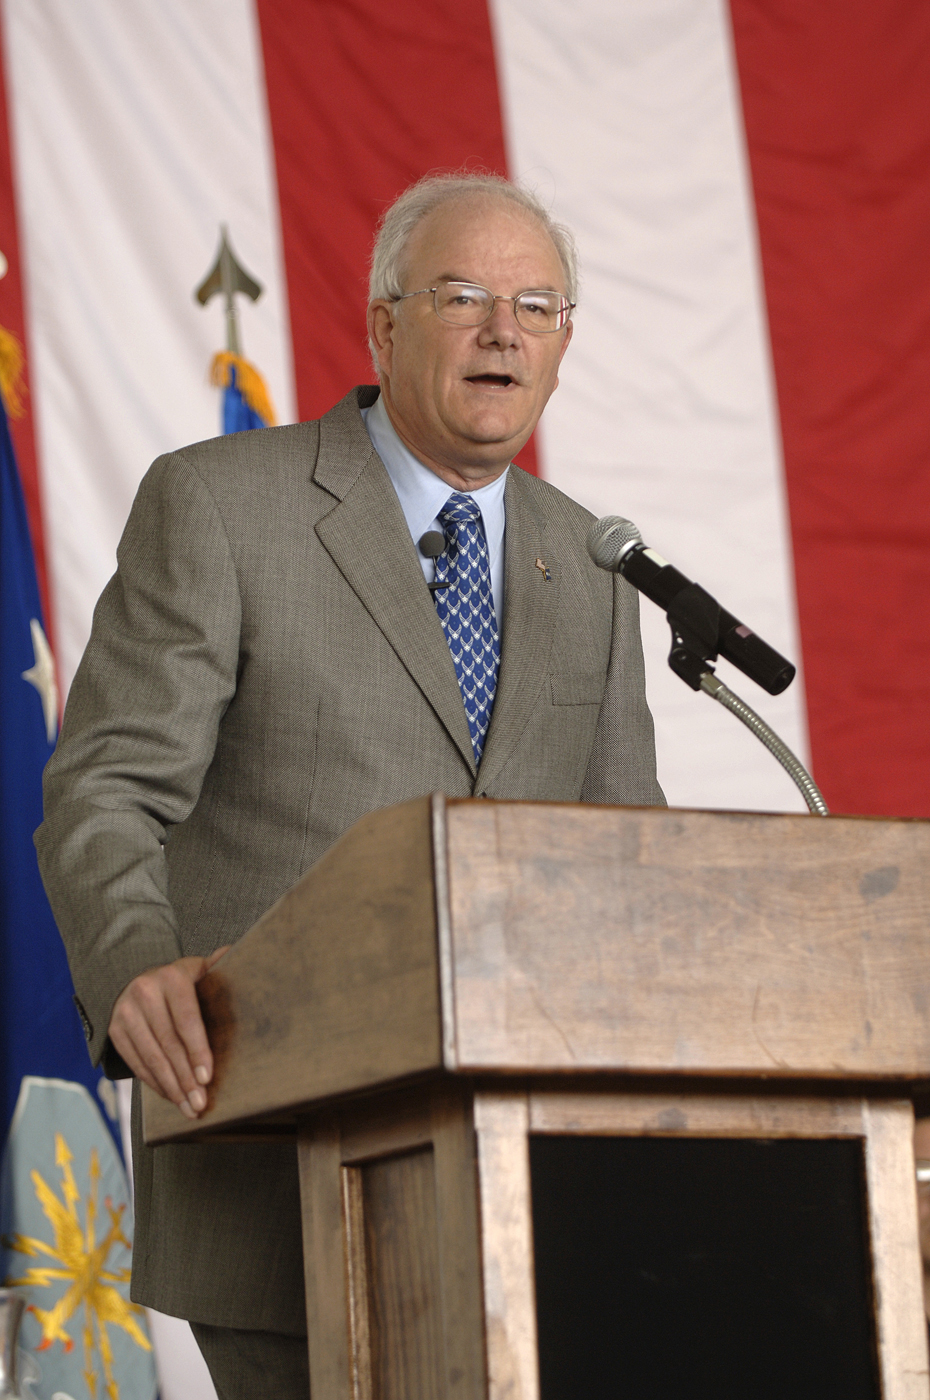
Secretary of the Air Force at Andersen

Secretary of the Air Force Michael W. Wynne speaks to Airmen about Air Force Smart Operations 21 at Andersen Air Force Base, Guam, Monday, March 20, 2006. Secretary Wynne is responsible for organizing, training, equipping and providing for the welfare of nearly 370,000 men and women on active duty, 180,000 members of the Air National Guard and the Air Force Reserve, 160,000 civilians, and their families.